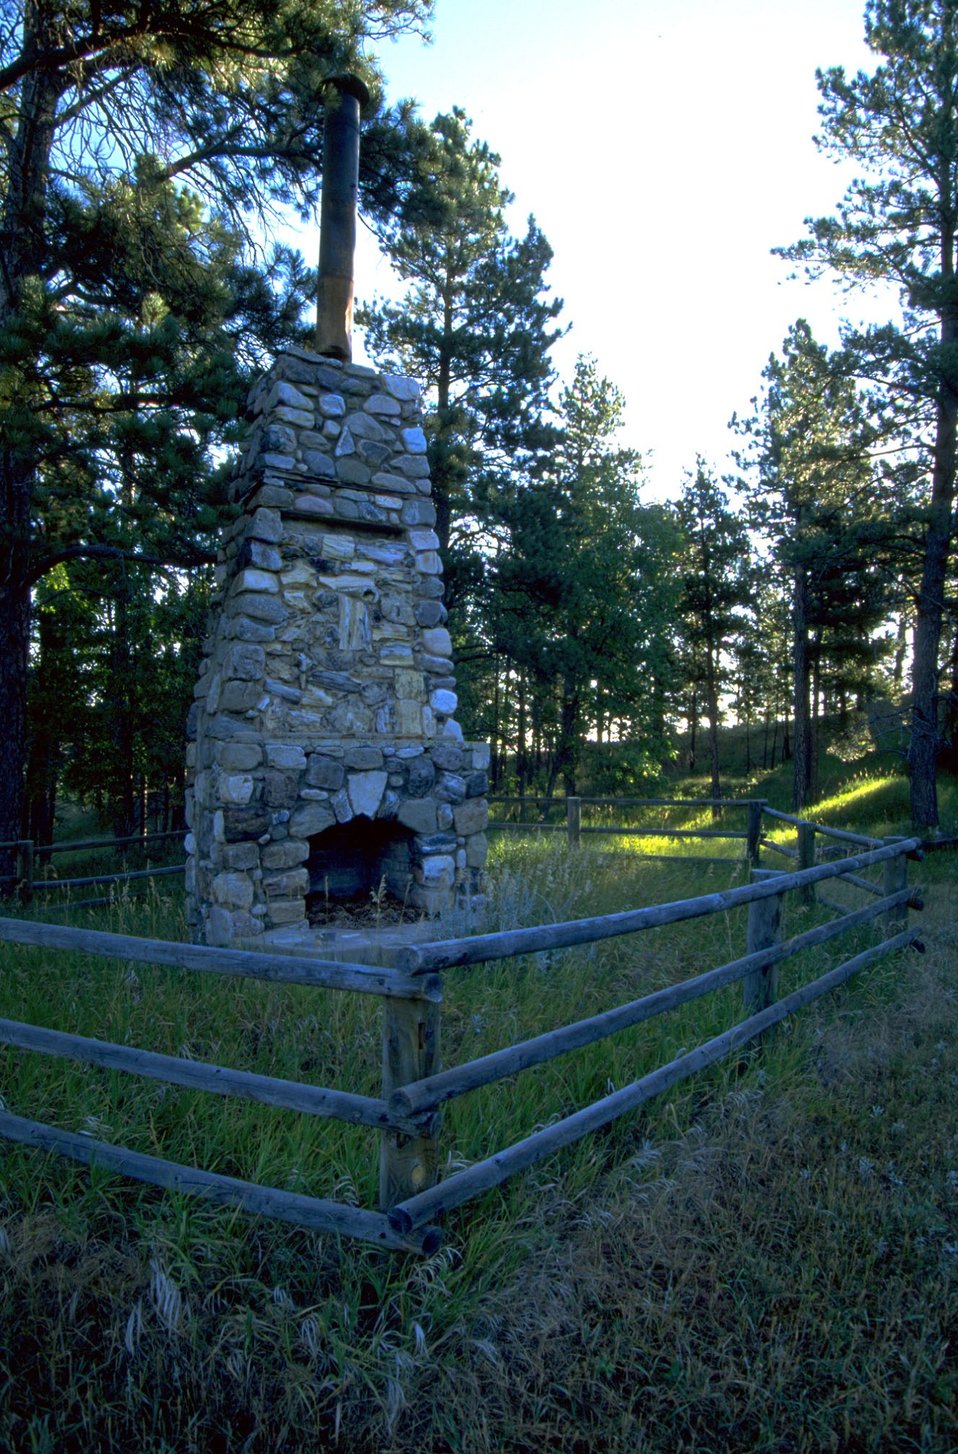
Camp Fechner, CCC Camp, Officer Quarters Chimney